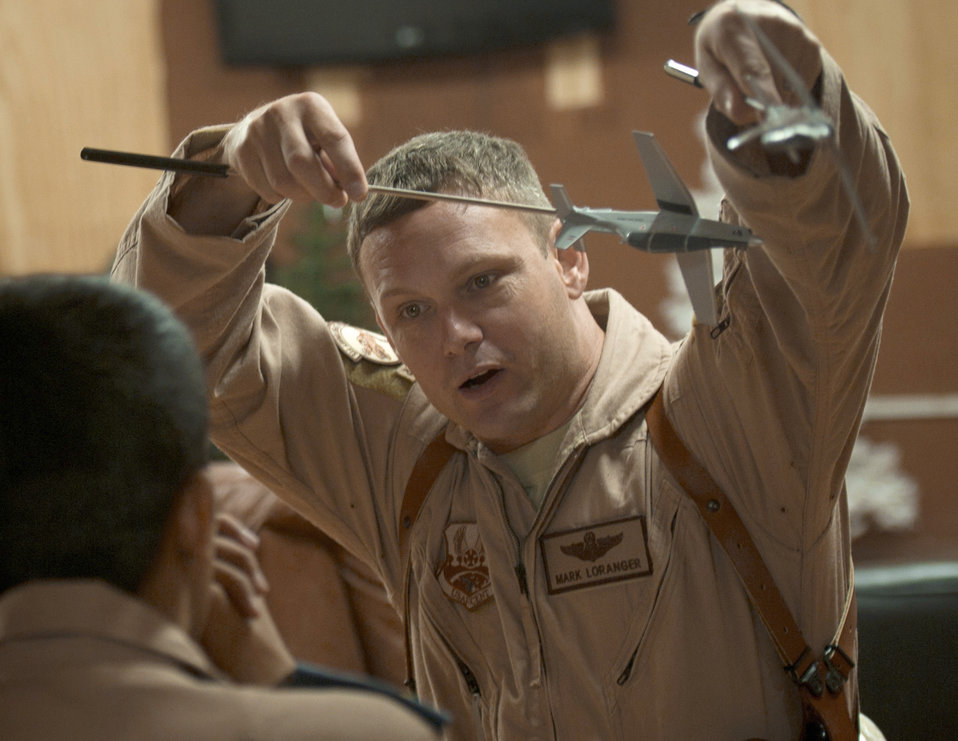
It works like this

Maj. Mark Lorange explains a flight routine to an Iraqi student instructor pilot June 29, 2011, at Combat Operating Base Speicher in Tikrit, Iraq. Lorange is an instructor pilot with the 52nd Expeditionary Flying Training Squadron.